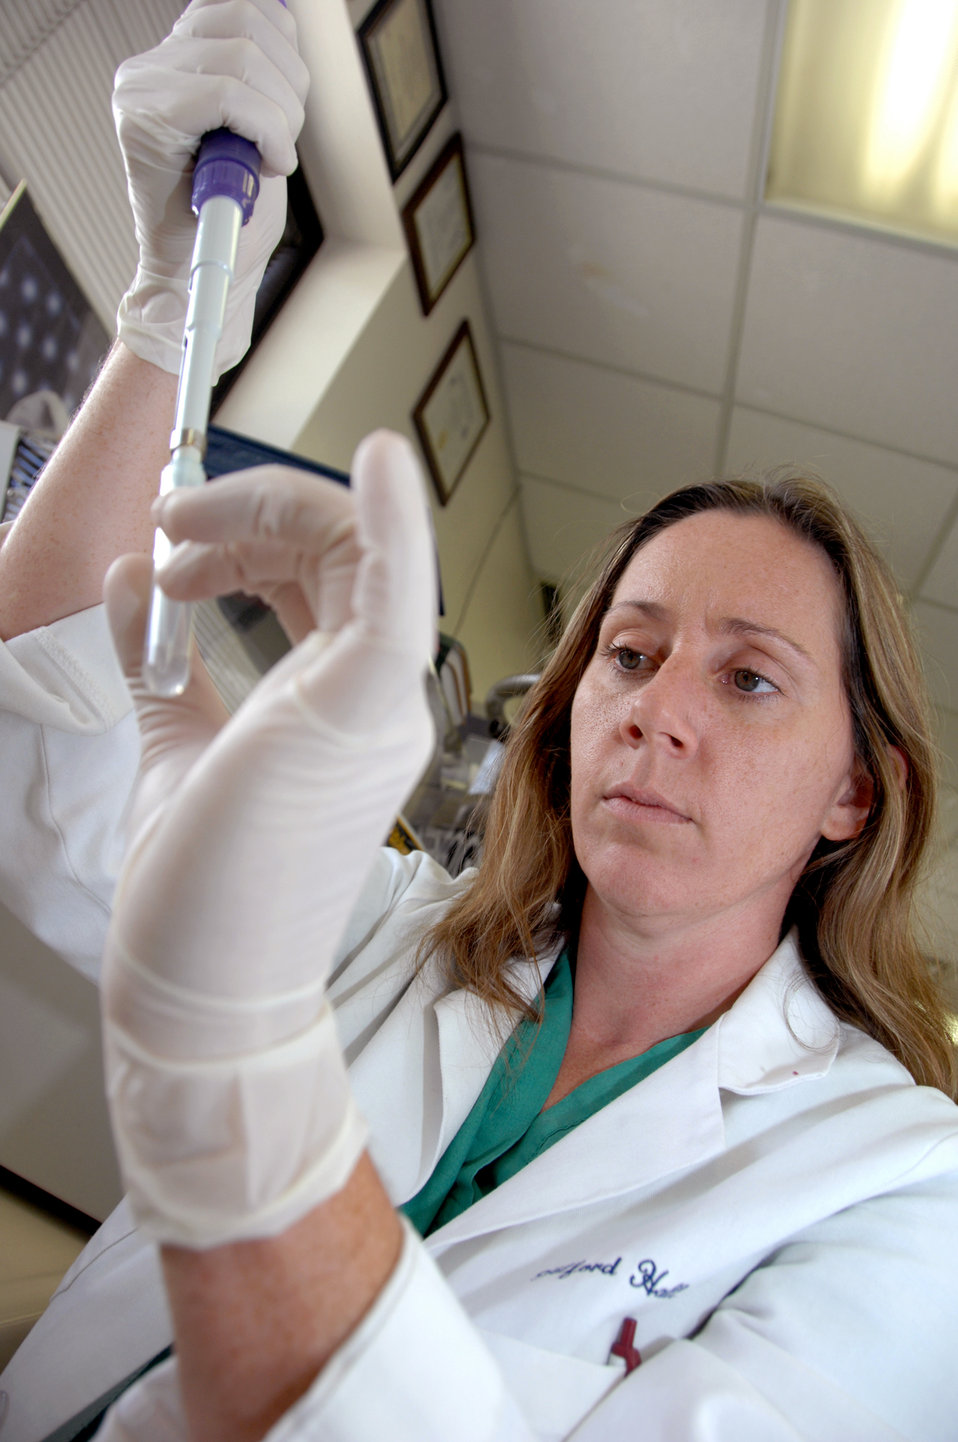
Medical researchers work to help wounded warriors

Capt. (Dr.) Heather Hancock, a general surgery resident and research fellow with the 59th Medical Wing Clinical Research Division at Lackland Air Force Base, Texas, performs lab tests July 14, 2010, to determine cell function during a vascular injury research study.